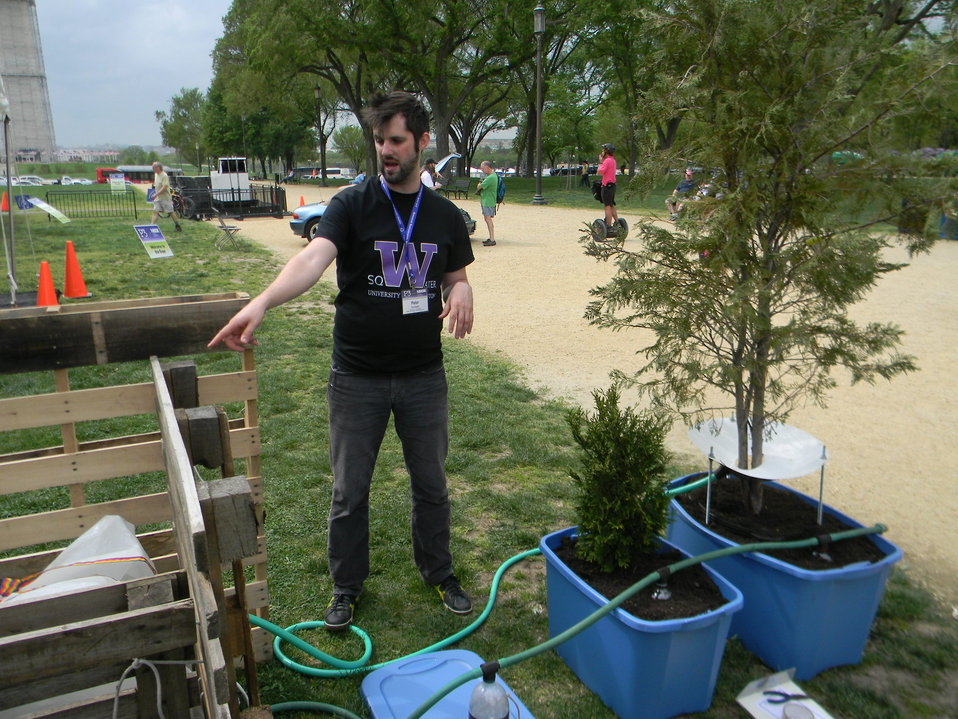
April 19, 2013 - P3 Design Expo, University of Washington

In Lima, Peru more than a third of the city’s 9 million occupants live in slums, many without reliable access to clean water. The city’s primary water supply, Andean glaciers below 5500 meters, will melt as a result of climate change. University of Washington students are experimenting with fog harvesting technologies to extract water from the shroud of fog that covers Lima from June to December. They are designing and evaluating new fog collection materials, configurations and systems to provide clean drinking water and irrigate public gardens for slum communities.

A student team member from the University of Washington team explains how their fog collection systems works.

UW Team P3 Page

People Prosperity and the Planet: National Sustainable Design Expo on the National Mall 18-19 April 2013